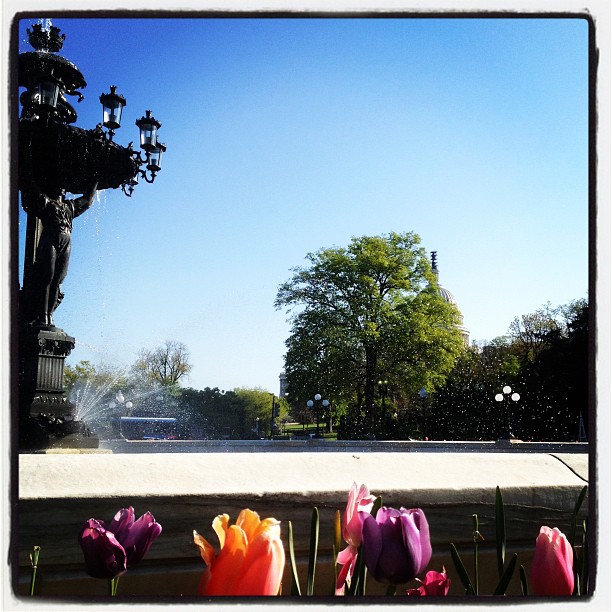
Bartholdi Fountain opens for season.